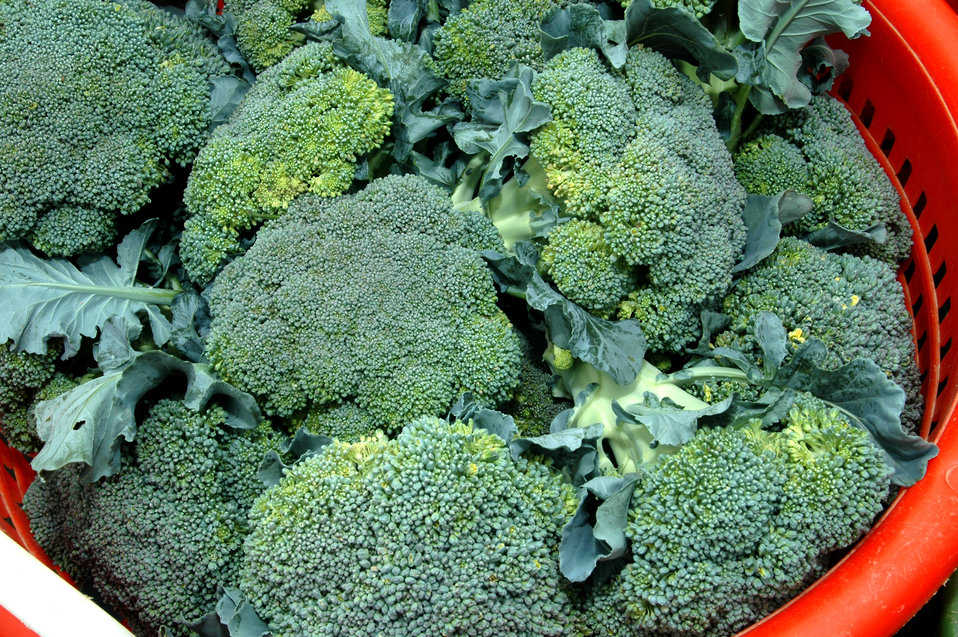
Broccoli for sale at the U.S. Department of Agriculture (USDA) Farmer’s Market held in the East parking lot of USDA's Whitten Building in Washington, D.C. on June 2, 2006.